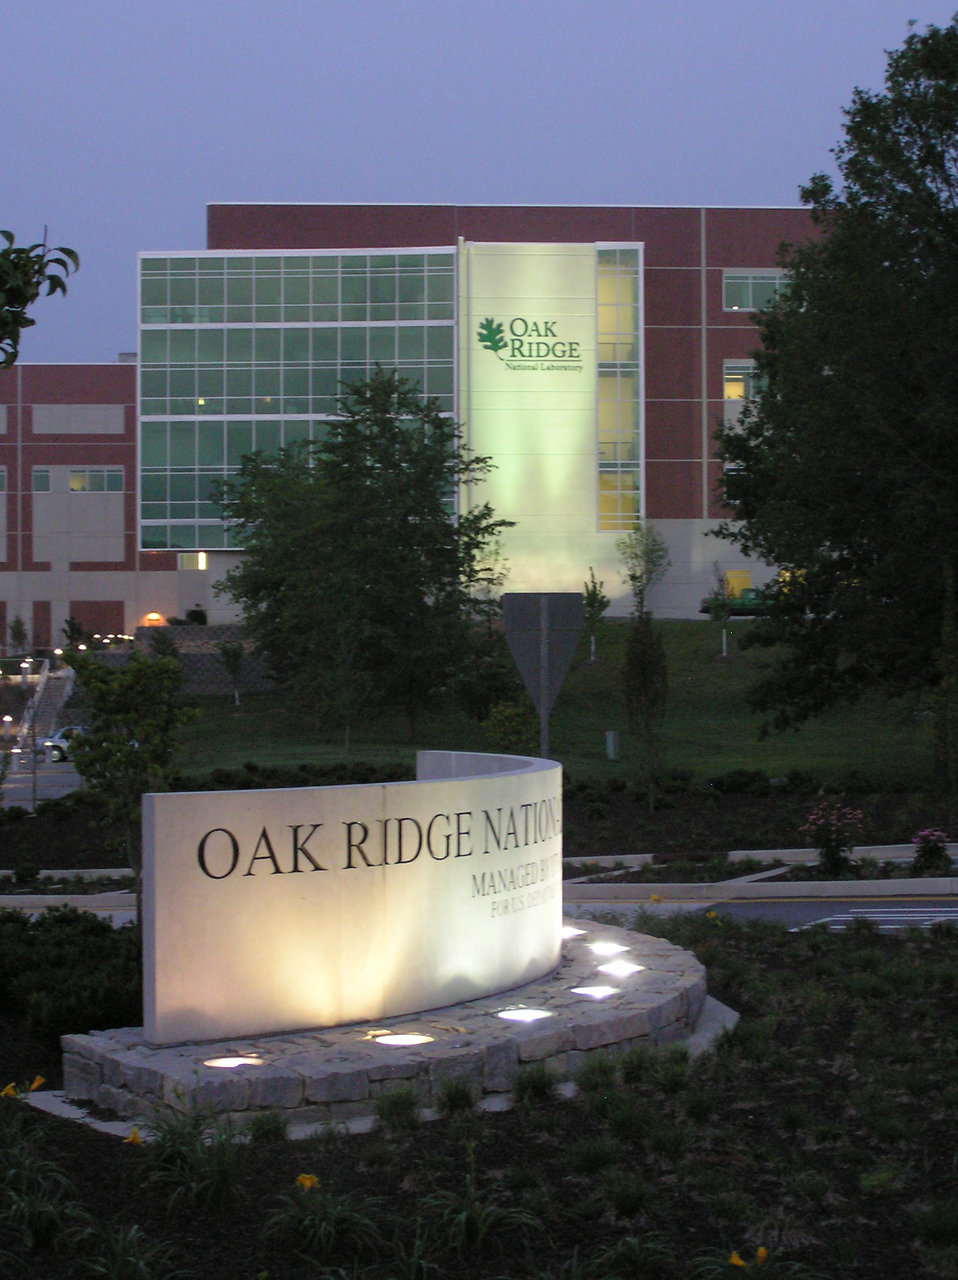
Oak Ridge National Laboratory entrance sign.